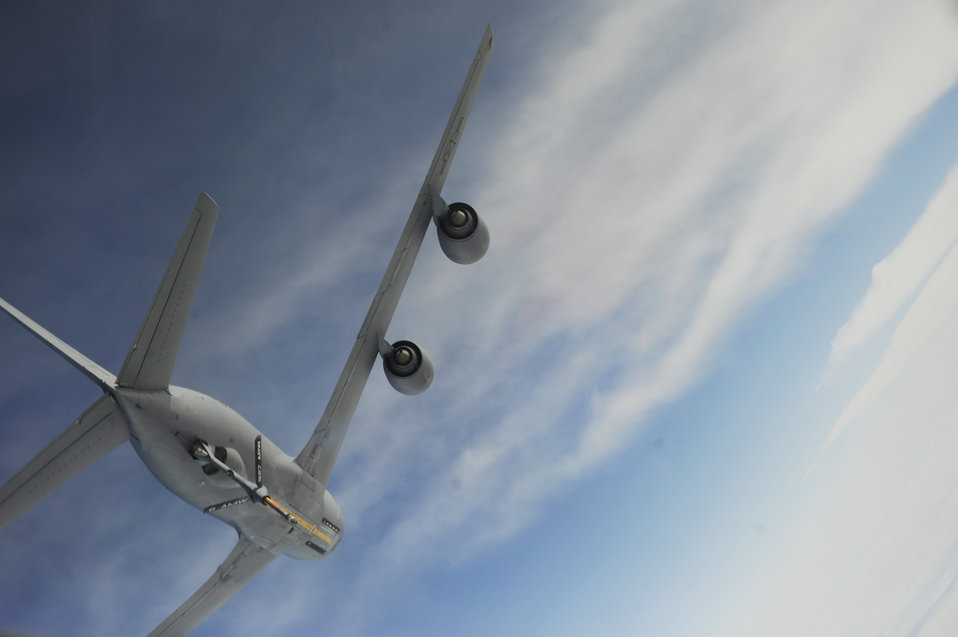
Charleston aircrew refuel near MacDill

A KC-135 Stratotanker from MacDill Air Force Base, Fla., stabilizes to prepare for air refueling operations during a training mission March 12, 2010 over the Atlantic Ocean.